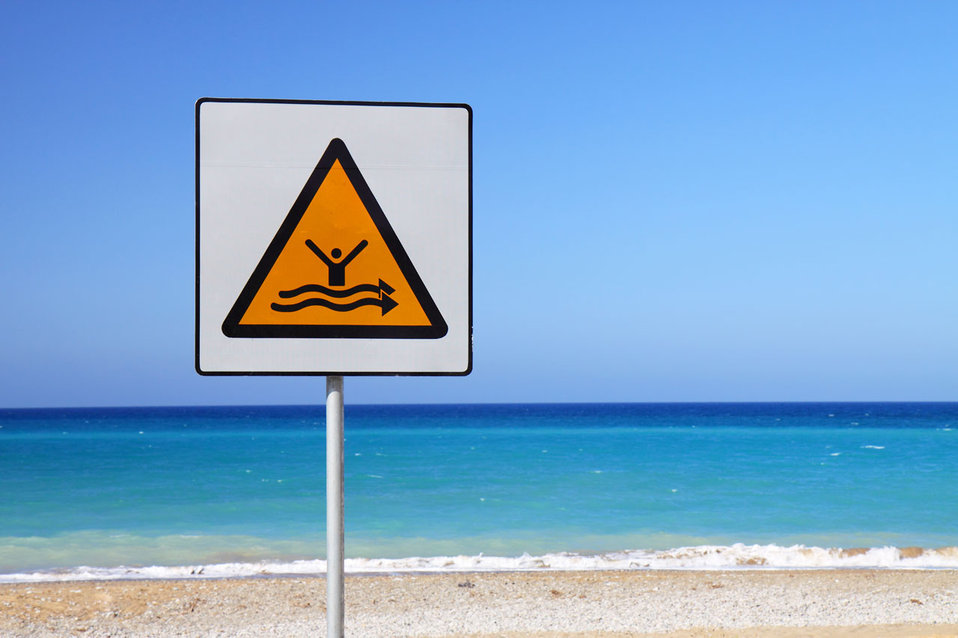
Strong current sign on beach.